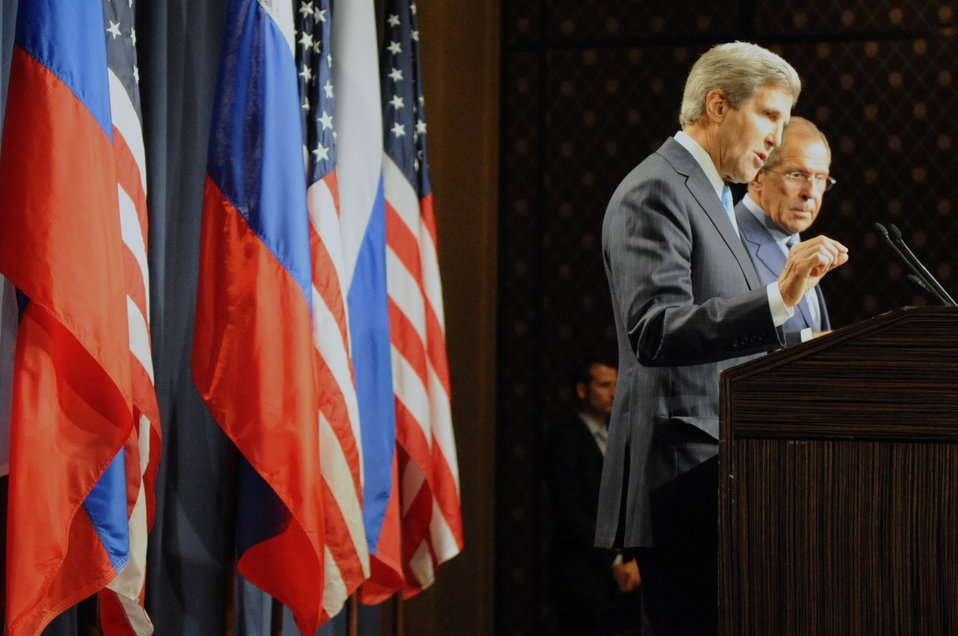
Secretary Kerry, Foreign Minister Lavrov Make Statements to Reporters

7:44 p.m., September 12, 2013 - U.S. Secretary of State John Kerry takes his turn as he and Russian Foreign Minister Sergey Lavrov address reporters before the outset of their negotiations over the elimination of Syrian chemical weapons.